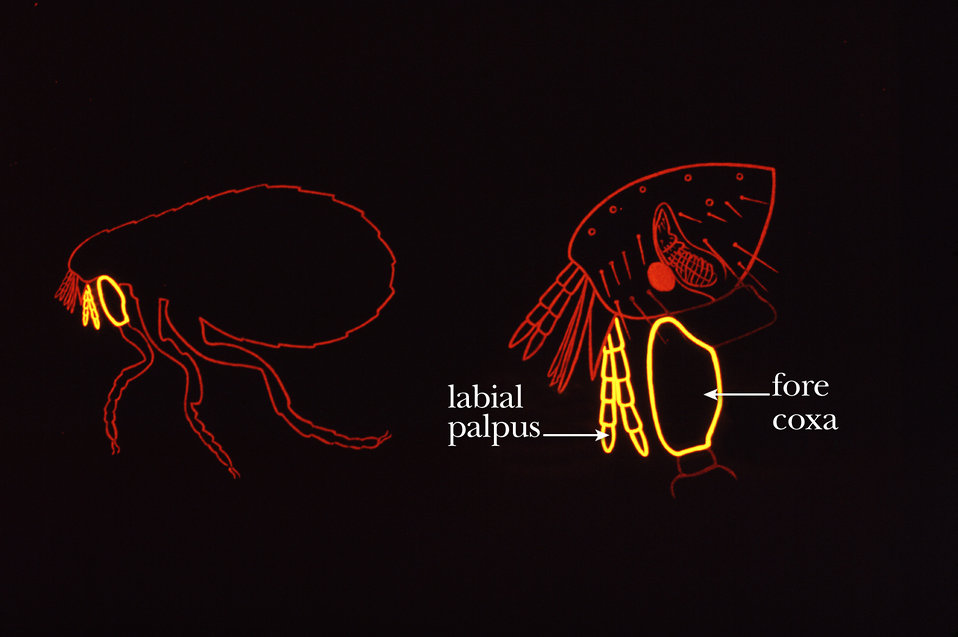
This illustration shows some of the morphologic characteristics on the head region of a flea used when identifying these insects.